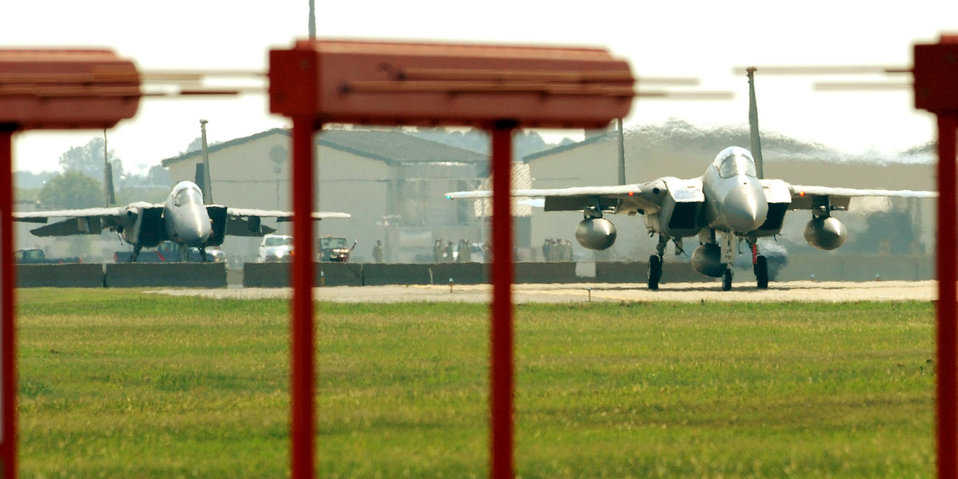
Final F-15 departs Langley, 71st FS prepares to inactivate

The F-15s are being sent to active-duty bases within the U.S., overseas and National Guard bases.